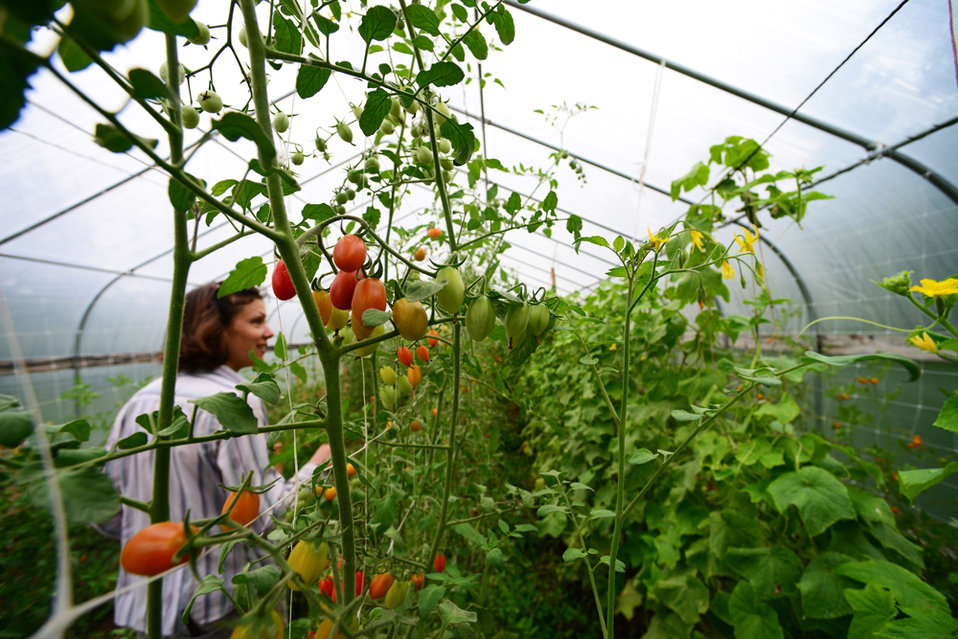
Freshies 2

Taylor Dale picks fresh cherry tomatoes grown in a hoop house to sell in the local farmer’s market in Santa Fe, N.M.